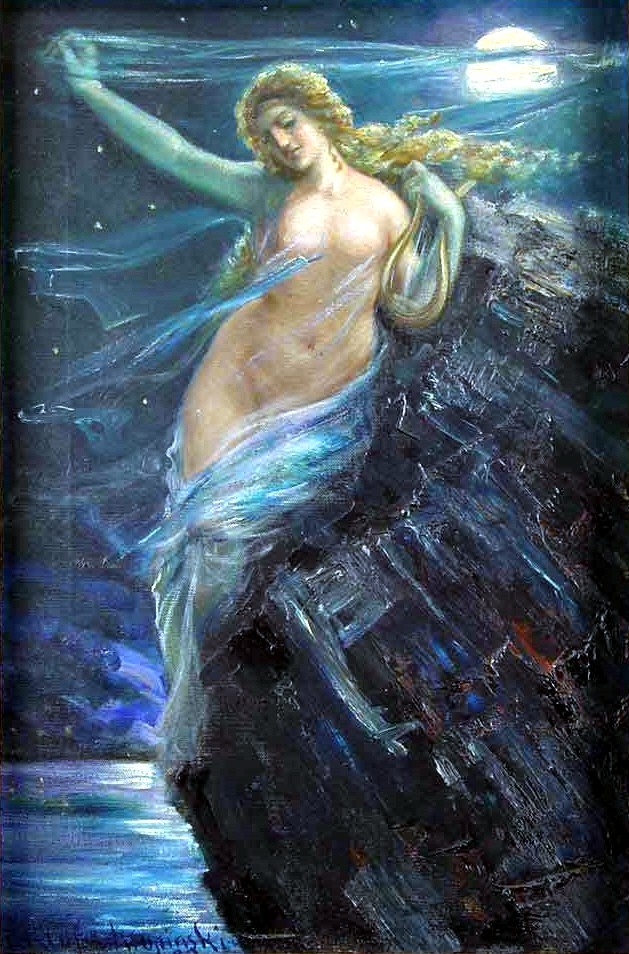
Loreley, 1899 Oil on canvas, 60 x 40 cm. Manipulated version.